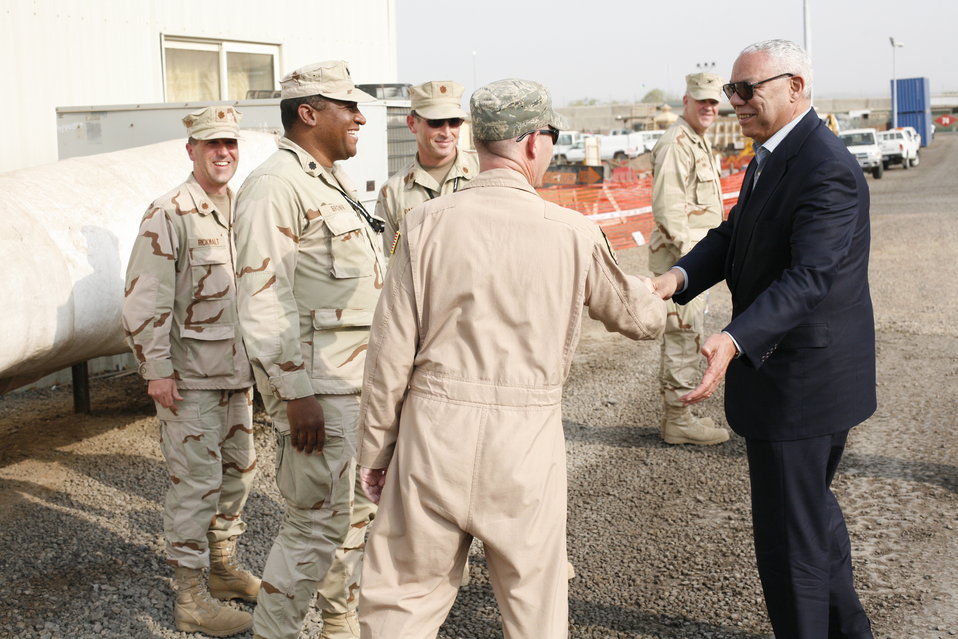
Former Secretary Powell Visits Soldiers in Djibouti

Former Secretary of State Colin Powell visits soldiers at Camp Lemonnier in Djibouti on July 8, 2011.